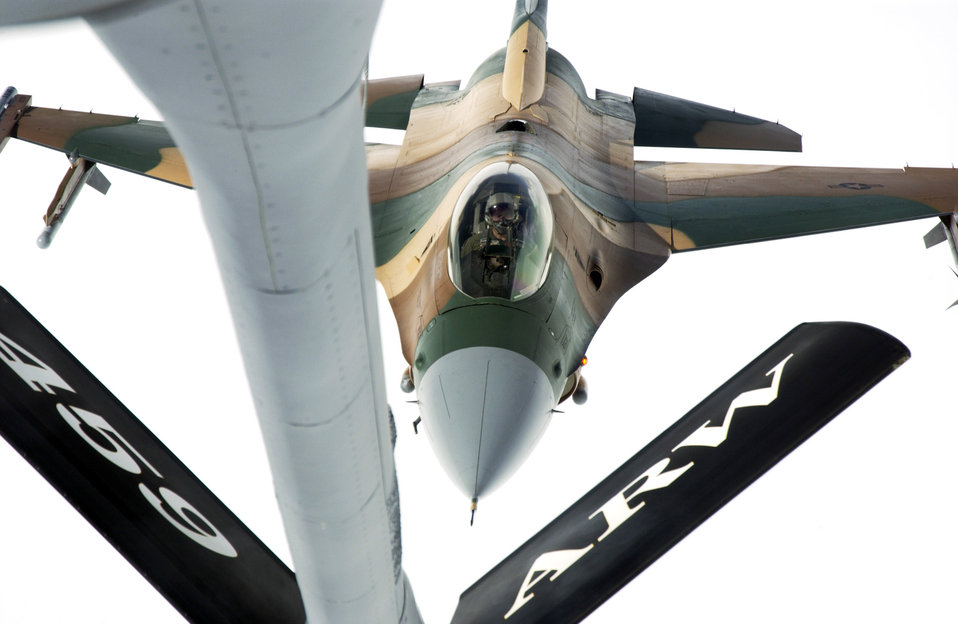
Flying colors

OVER NEVADA -- An F-16 Fighting Falcon from the 64th Aggressor Squadron at Nellis Air Force Base, Nev., approaches the boom on of a KC-135 Stratotanker to refuel during a Red Flag mission recently. The F-16s have a unique paint scheme to match their role as simulated enemy Mig aircraft during quarterly Red Flag exercises.